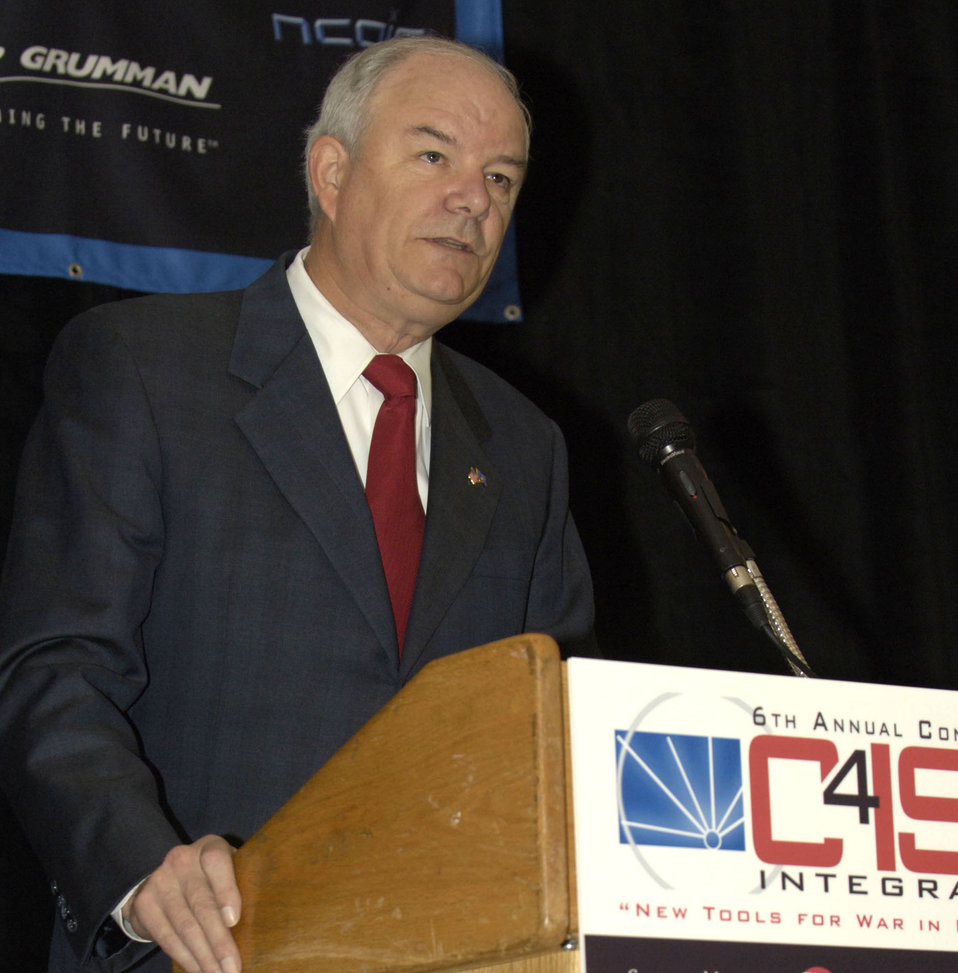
8th Air Force to become new cyber command

Secretary of the Air Force Michael W. Wynne announces that 8th Air Force will become the new Air Force Cyberspace Command at the 6th Annual C4ISR Integration Conference in Crystal City, Va., Nov. 2. Cyberspace Command will be led by Lt. Gen. Robert J. Elder Jr.